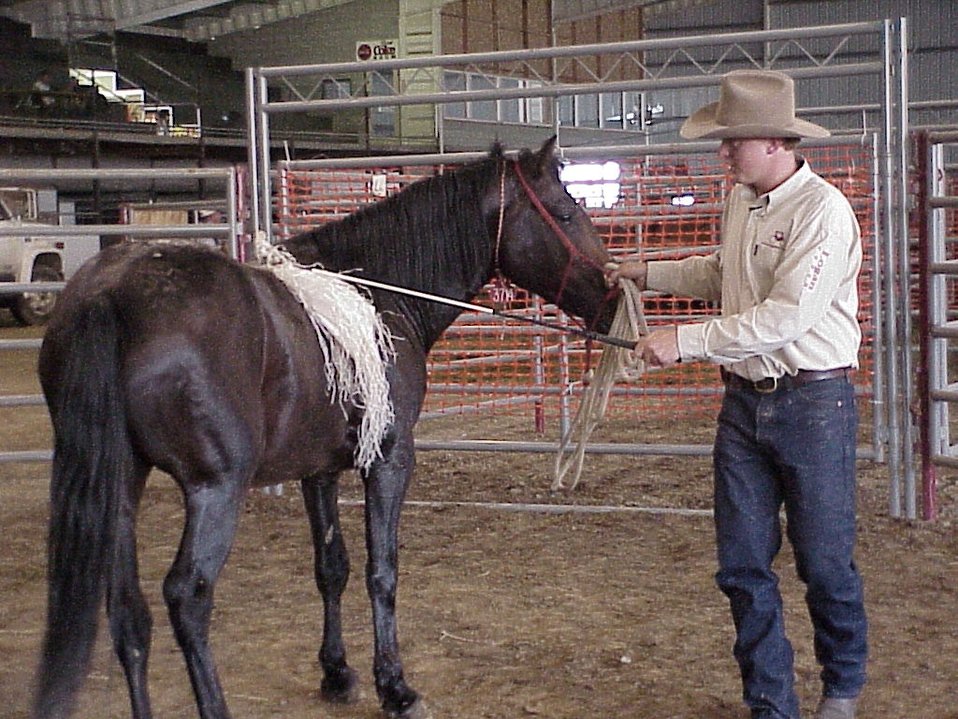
Horse Gentler Mario Johnson Lewiston Wild Horse and Burro Adoption Program Auction WHB indoor auction Cottonwood Field Office UCSC Upper Columbia Salmon Clearwater District